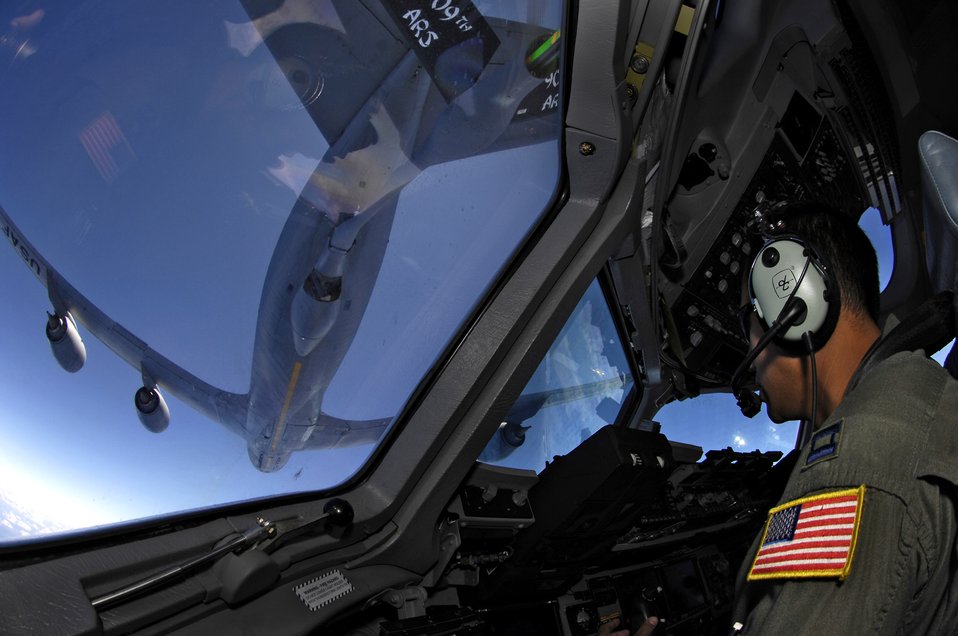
Hickam crew prepares for AMC Rodeo

Capt. Al Basioa pilots a C-17 Globemaster III as it receives fuel from a KC-135 Stratotanker June 22 during a refueling training mission over the Pacific Ocean. The C-17 from the 535th Airlift Squadron at Hickam Air Force Base, Hawaii, and the KC-135 from the 909th Air Refueling Squadron at Kadena Air Base, Japan, are practicing for the upcoming 2007 Air Mobility Command Rodeo.